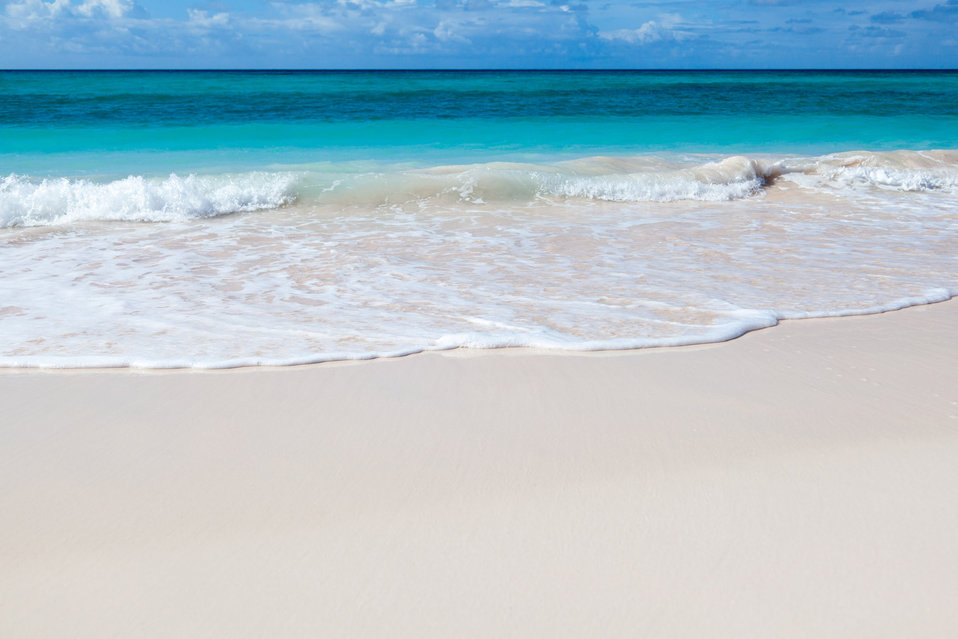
White beach and sea

White beach, coming wave and sea.